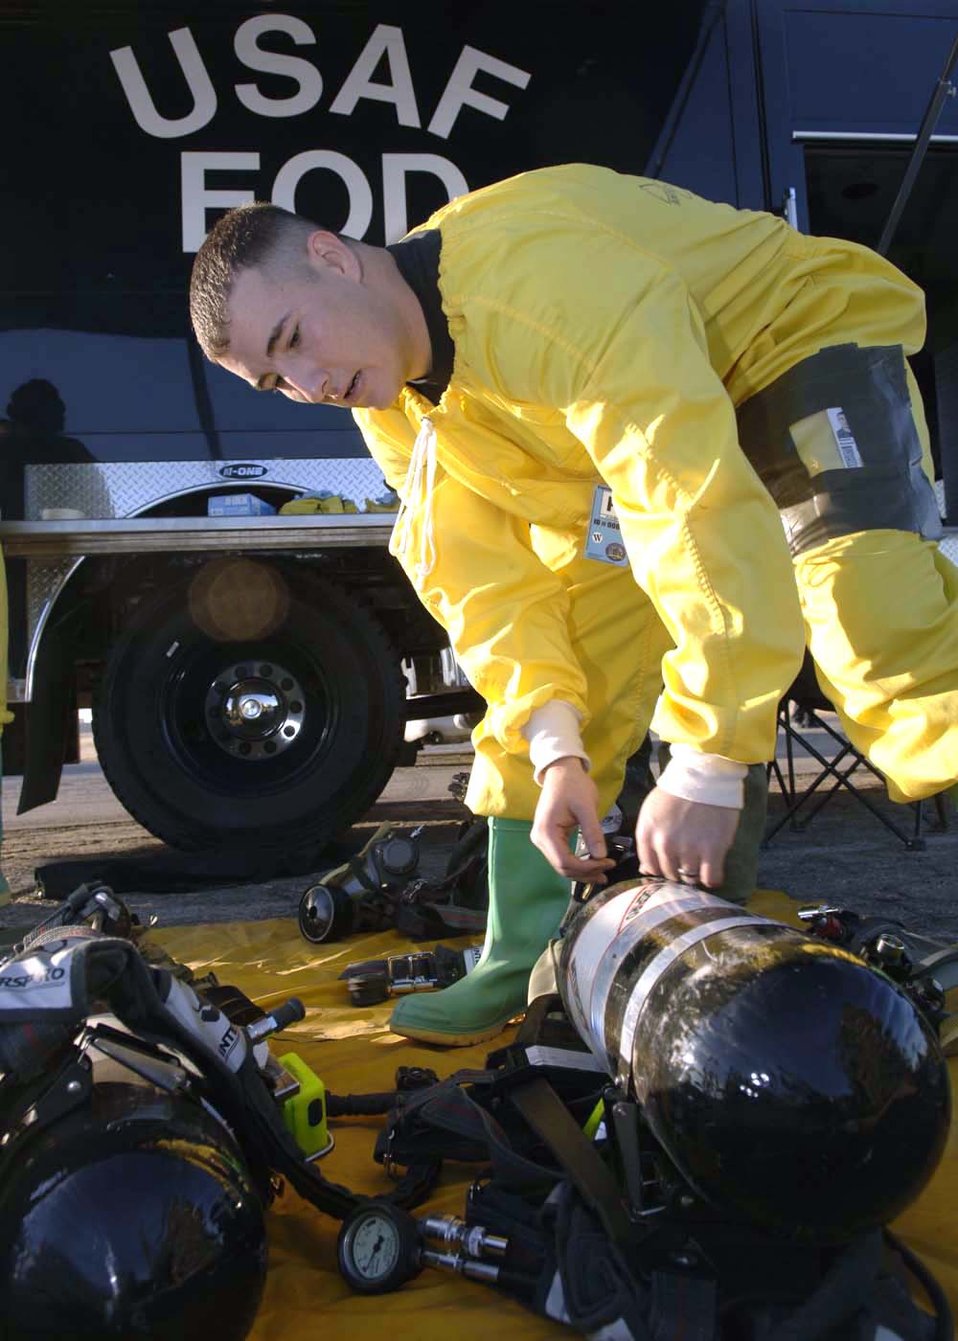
Training to fight fires together

Staff Sgt. Richard Swann checks equipment as part of the initial setup entry procedures before going to search the wreakage of a simulated aircraft accident Dec. 4 at Davis-Monthan AFB, Ariz. Exercise Vigilant Shield 07 is a joint Department of Defense and federal nuclear weapon accident exercise. The exercise scenario involved a C-17 Globemaster III carrying four nuclear weapons to be diverted to Davis-Monthan AFB due to simulated engine failure that caused an aircraft accident. Sergeant Swann is an explosive ordnance disposal journeyman from the 355th Civil Engineering Squadron.